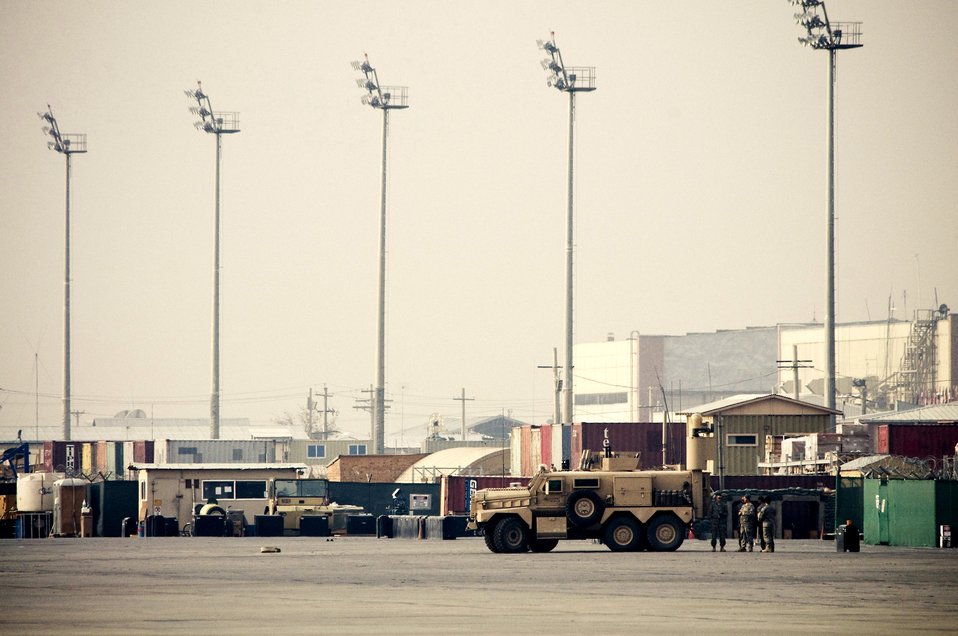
Airmen respond to buried threat in Afghanistan

The 755th Air Expeditionary Group Explosive Ordnance Disposal team stands by at a safe distance from a controlled burn on the flightline Nov. 7 at Bagram Airfield, Afghanistan. The team waited until the smoke had completely cleared before approaching the extinguished Soviet bomb and gave the